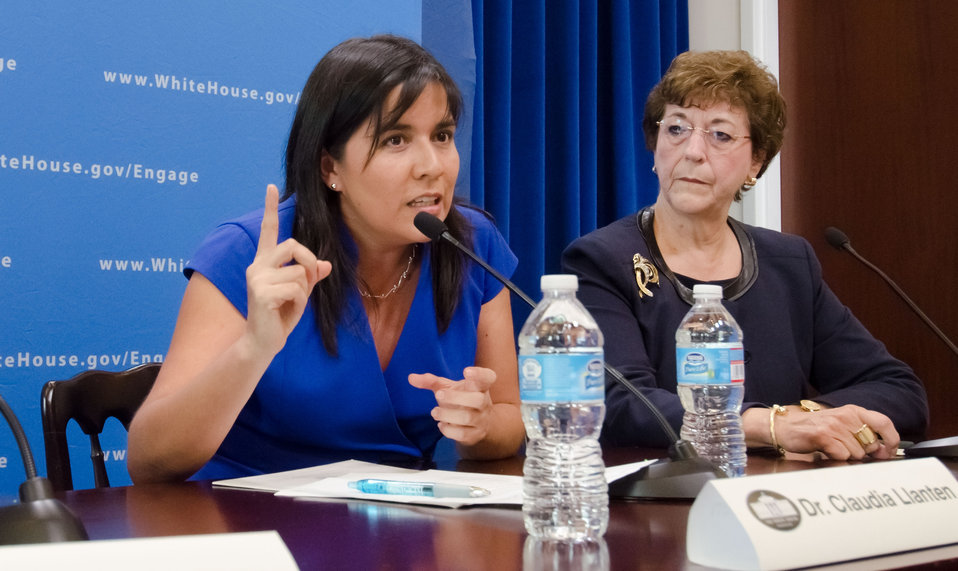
Catholic Medical Mission Board Project Director Dr. Claudia Llanten talked about food sources situations in Peru, during an event her work and ten other honorees recognized for her efforts to reduce hunger and increase food security in the U.S. and internationally at the White House Champions of Change Strengthening Food Security at Home and Abroad Event held at the White House on Thursday, September 6, 2012, in Washington, D.C.